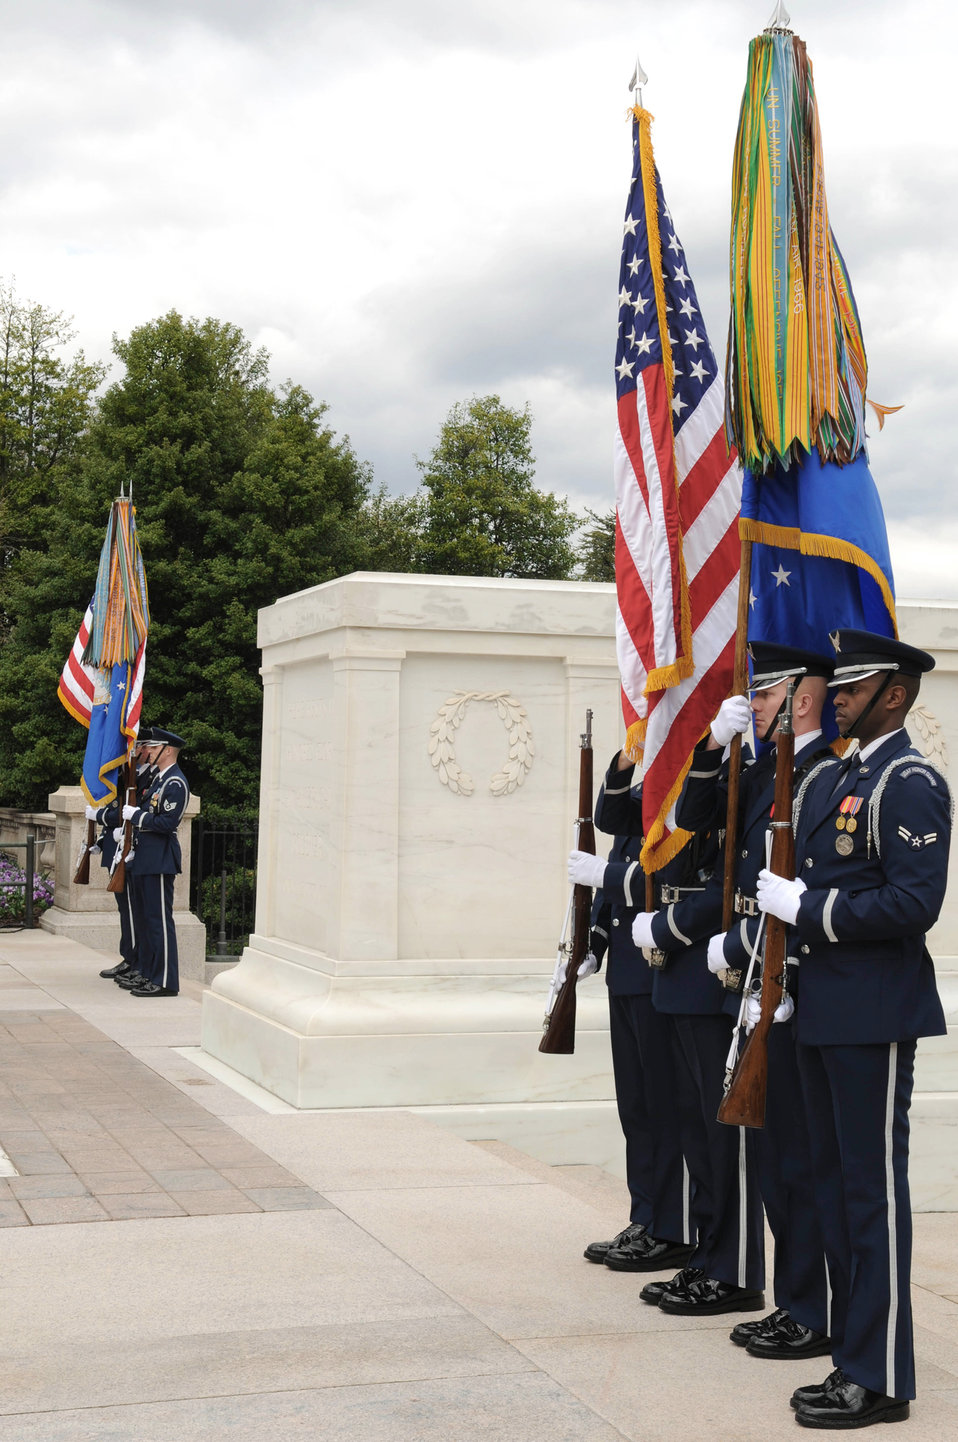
Wreath laying ceremony

The U.S. Air Force Honor Guard colors team presents the colors during a wreath-laying ceremony at the Tomb of the Unknowns April 5, 2011, at Arlington National Cemetery, Va.. The guest honoree and wreath presenter was Gen. Col. Alexander Nikolyevich Zelin, commander-in-chief of the Russian air force. The wreath was laid in honor of all fallen service members.